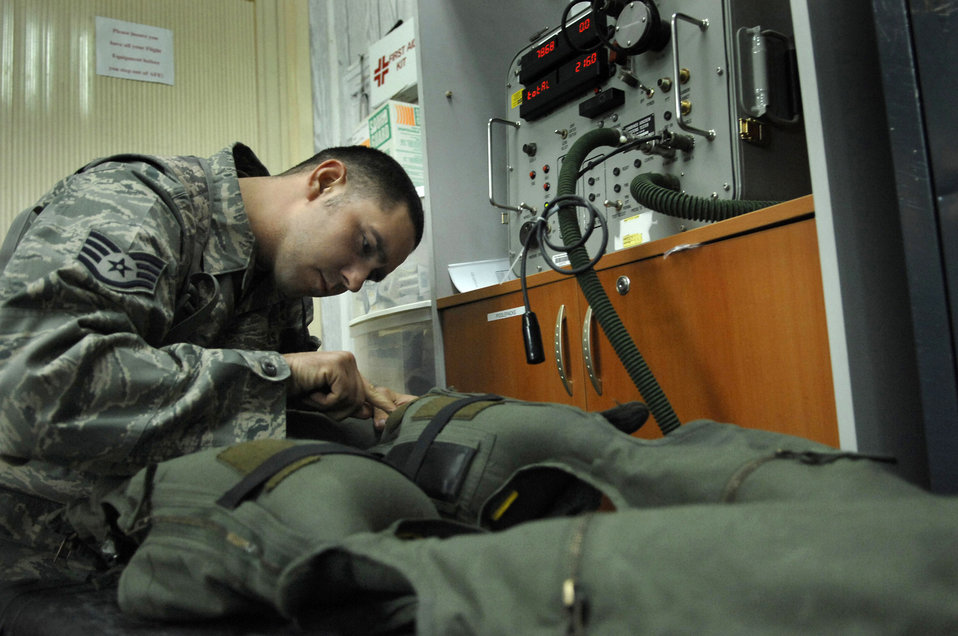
Airmen work to keep pilots safe

Staff Sgt. Matt Vincent inspect for any leaks in the air bladders of an anti-G suit June 23 at Joint Base Balad, Iraq. The suit is worn by F-16 Fighting Falcon pilots to combat the gravitational forces experienced during high-speed maneuvers. The suit prevents blood from rushing rapidly out of the brain, helping the pilot to maintain consciousness during flight. The technicians are responsible for the maintenance and operability of all the F-16 pilot gear, including their helmets and survival equipment. Sergeant Vincent is a 77th Expeditionary Fighter Squadron aircraft equipment technician deployed from Shaw Air Force Base, S.C.